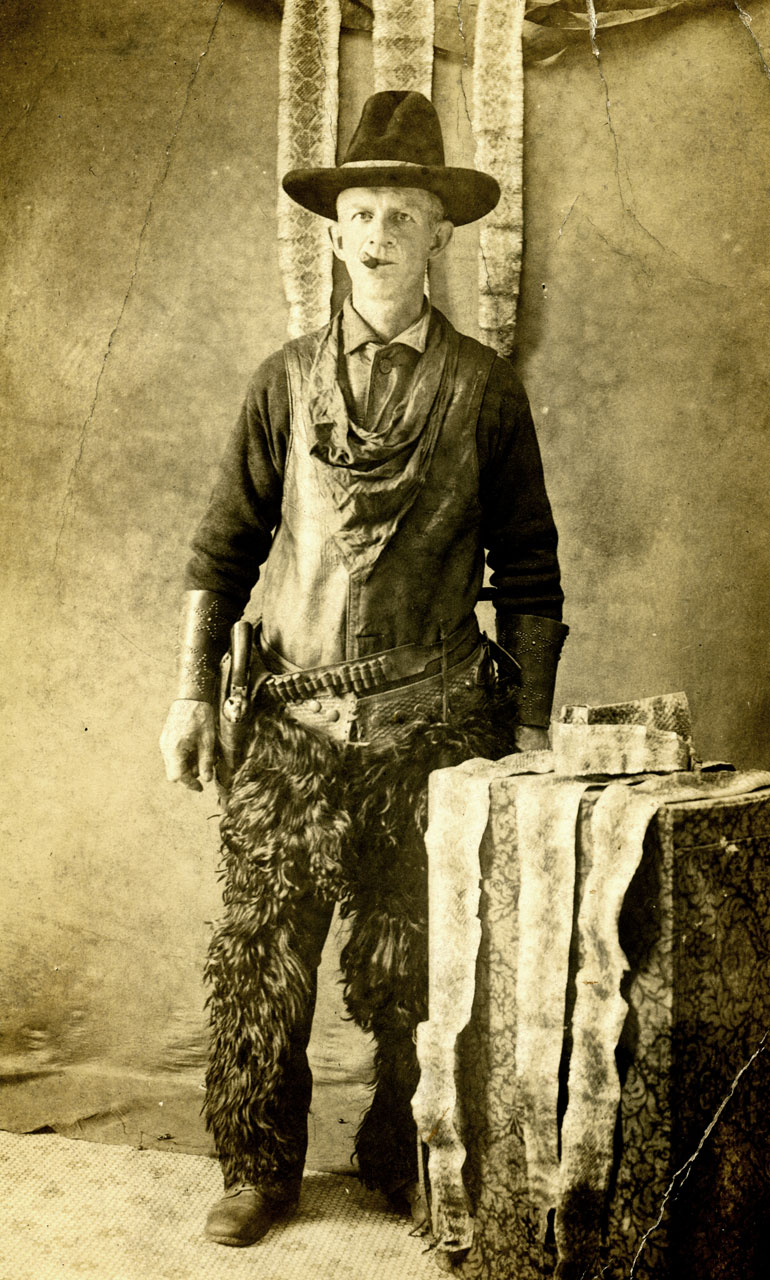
The snake hunter

Vintage postcard of a mean snake hunter, with skins to prove it.